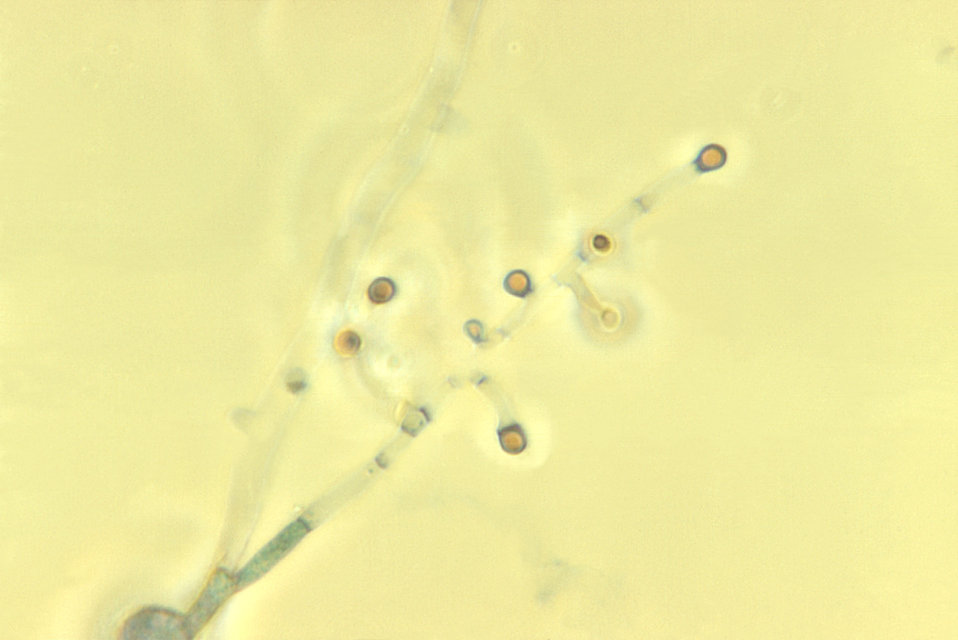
This photomicrograph depicted a number of Microsporum persicolor fungal microconidia. Under this relatively-high magnification of 1500X, the ultrastructural morphology exhibited by these spores is revealed.